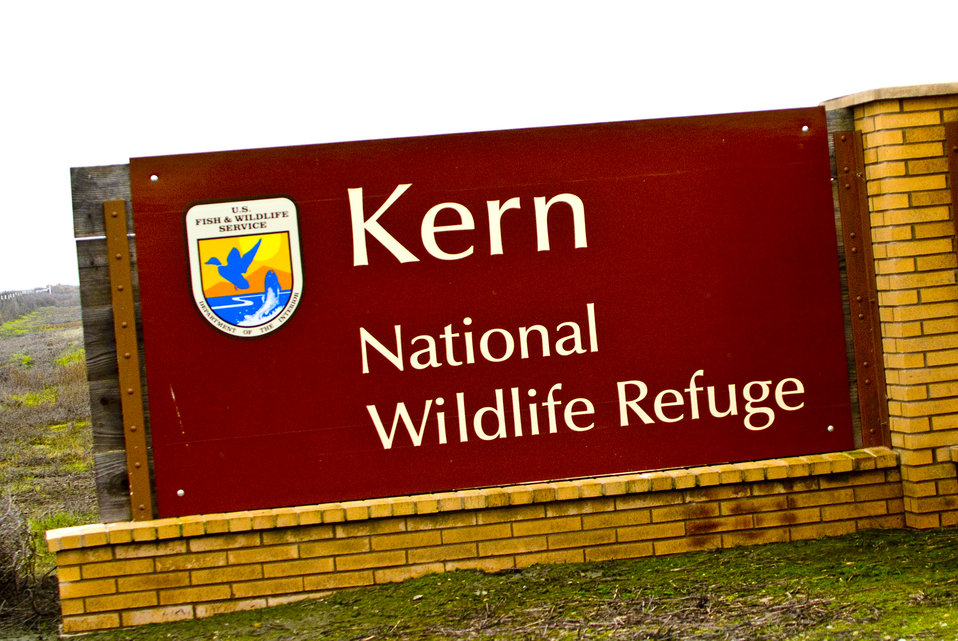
Kern National Wildlife Refuge

Justine Belson/USFWS